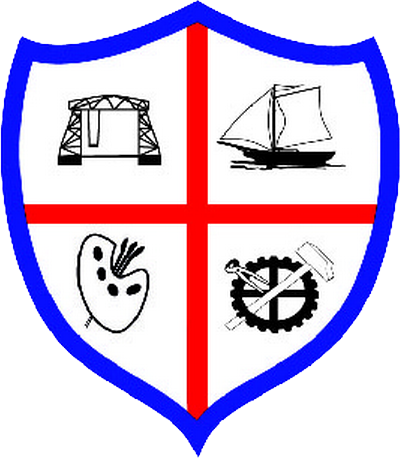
Official emblem of the Buenos Aires' bario of La Boca, as of August 2011